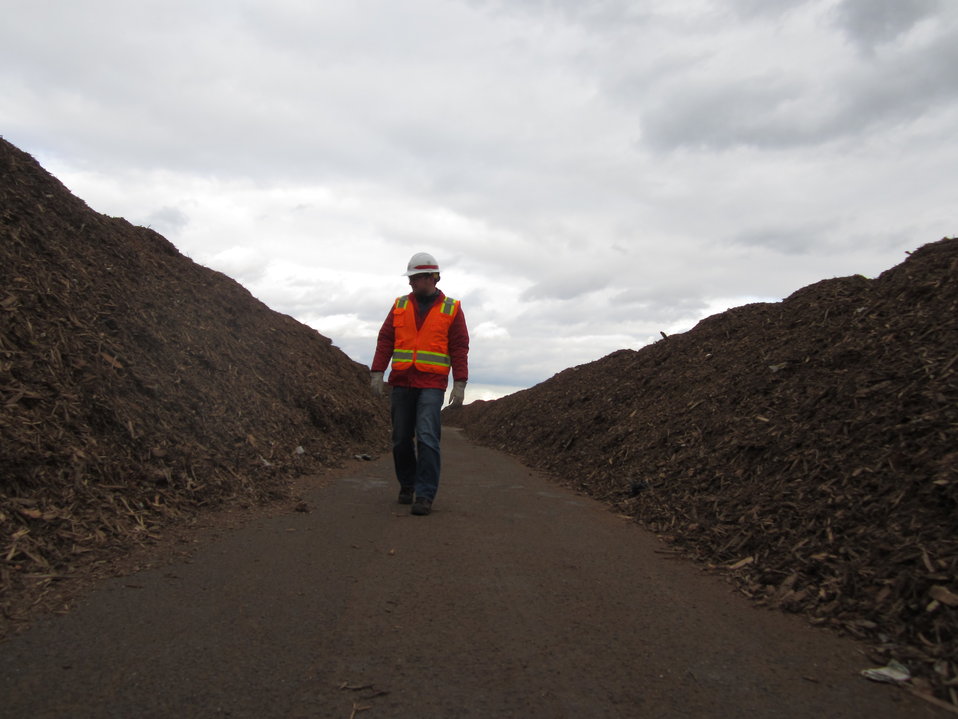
Sacramento District responds to Sandy

The Sacramento District's Justin Hake takes a rough measure of tree debris piles at Floyd Bennett Field in Queens, NY, Nov. 24, 2012. Trees and shrubs destroyed by Sandy are ground up for reuse or disposal. The wood chips are often made available as mulch for landscaping, but sometimes must be discarded if there's a risk that they're infested with an invasive species. The Asian longhorn beetle is a threat in this part of the country.